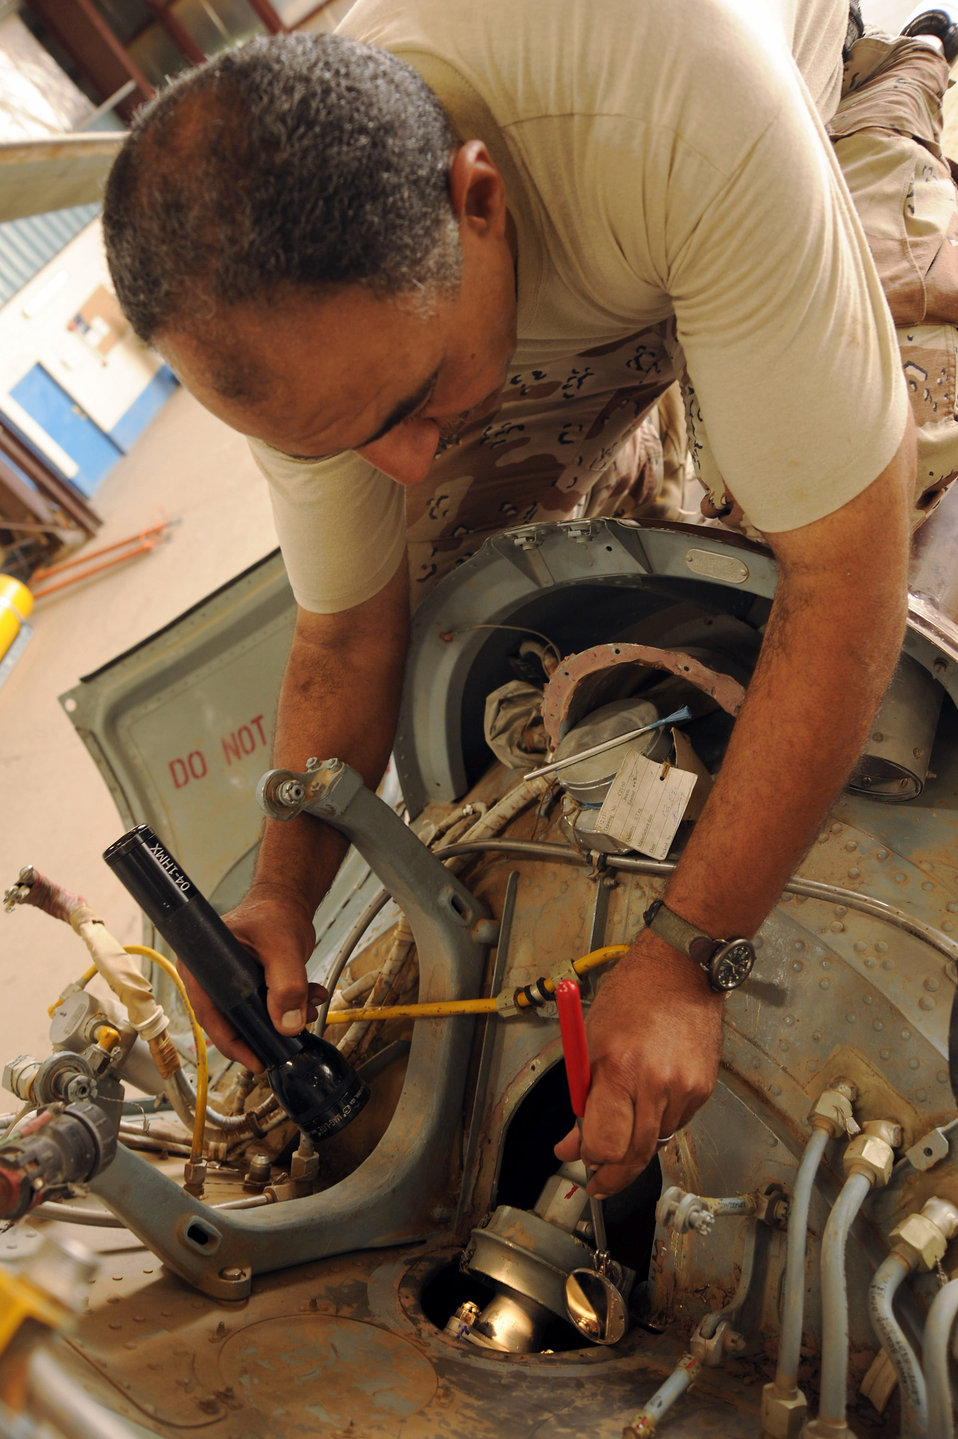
Iraqi airmen keep helicopter fleet flying

Iraqi air force Lt. Col. Auday Yasseu Yousif inspects a section of the tail rotor drive shaft of a Mi-17 Hip helicopter Sept. 11 at Al Taji Air Base, Iraq. The helicopter had made a hard landing and struck its tail skid against the ground, requiring a close inspection of its tail section. Colonel Yousif is chief engineer for Iraqi air force Squadron 4 second-line maintenance.